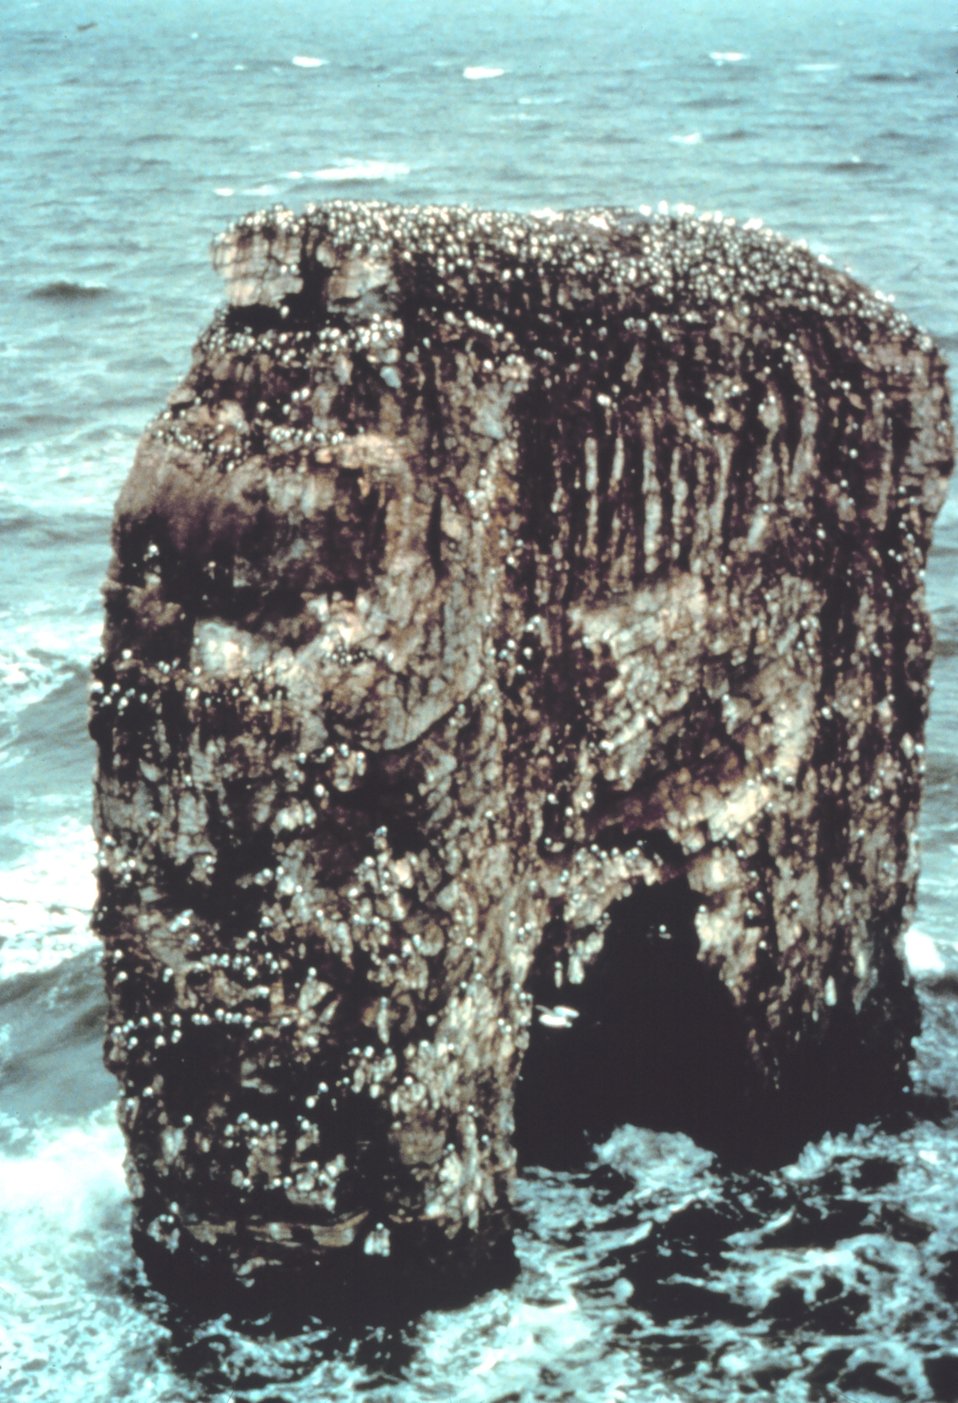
Murre colony